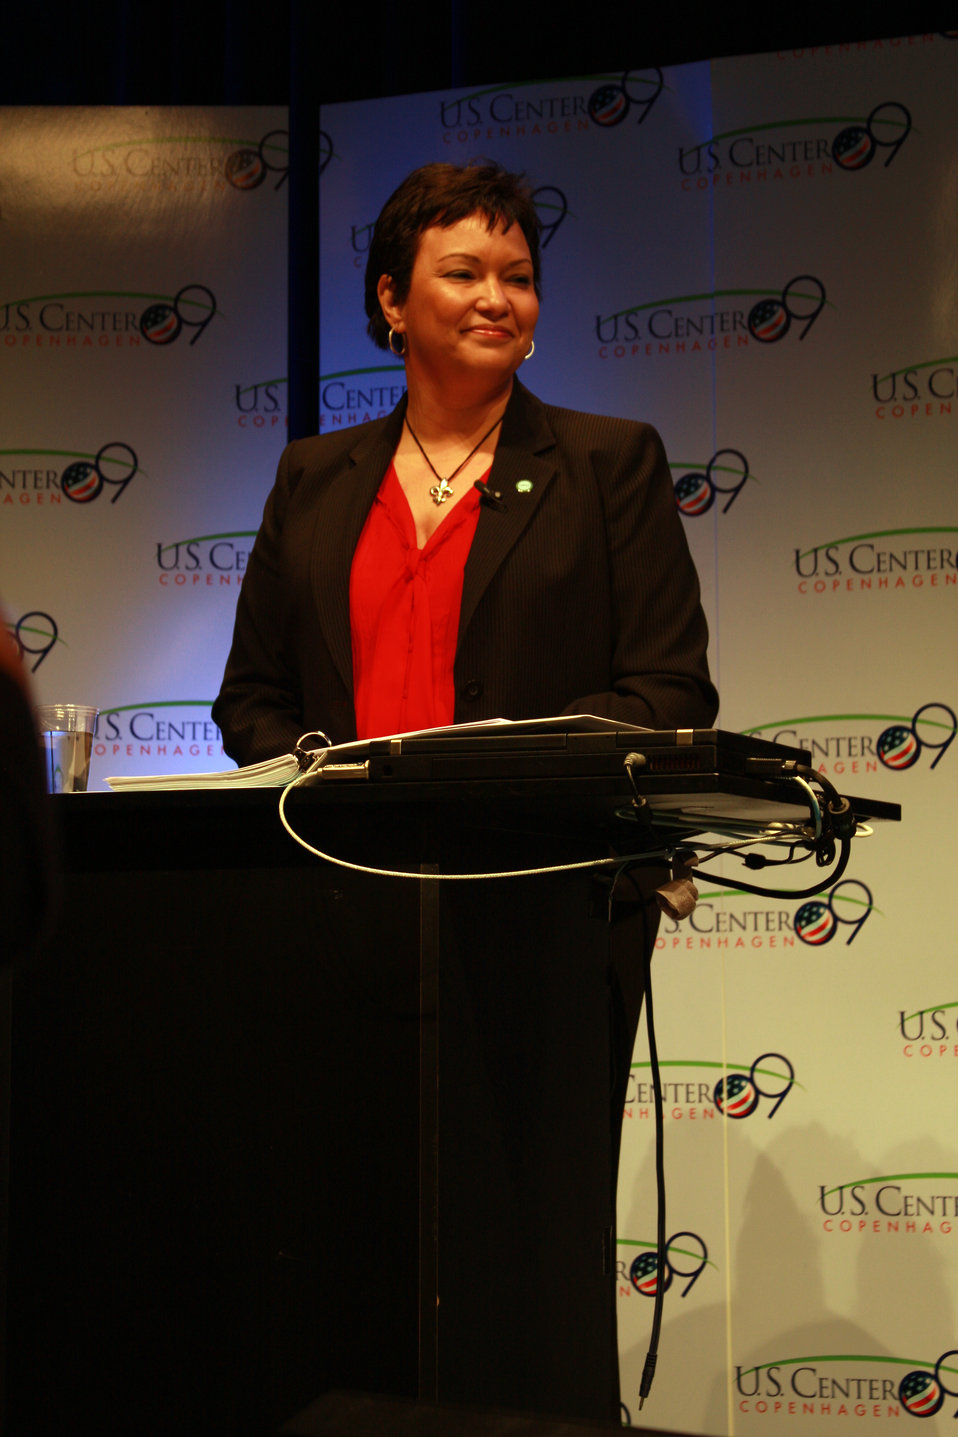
Remarks by U.S. Environmental Protection Agency Administrator

U.S. Environmental Protection Agency Administrator Lisa P. Jackson provides remarks at the U.S. Center at COP15 (Conference of the Parties to the UN Framework Convention on Climate Change) in Copenhagen, Denmark December 10, 2009.